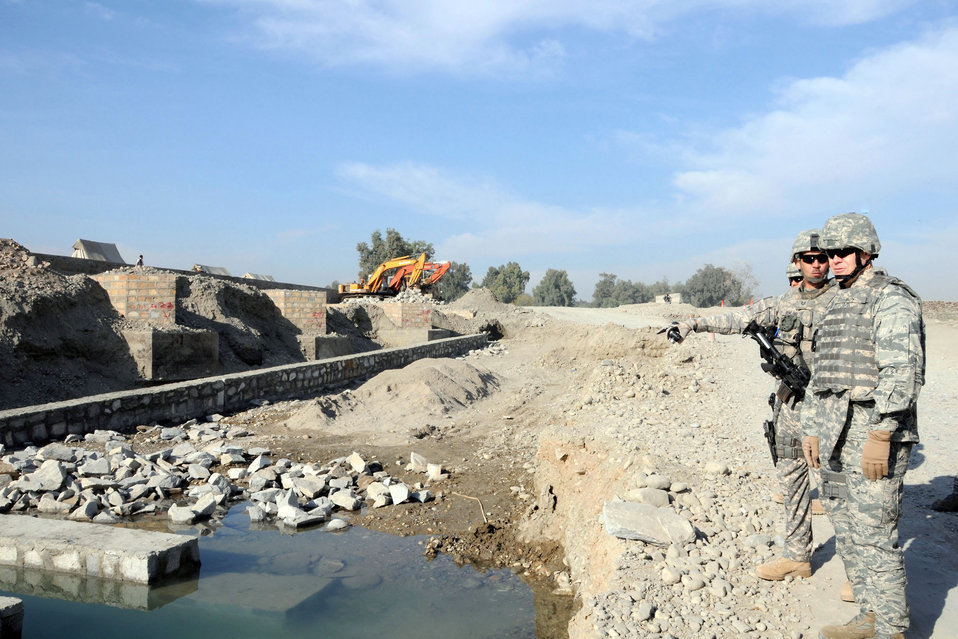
Chief Master Sgt. of the Air Force James A. Roy, speaks with Staff Sgt. Joshua Morrissette

Chief Master Sgt. of the Air Force James A. Roy (right), speaks with Staff Sgt. Joshua Morrissette at the Air Force-led Nangahar Provincial Reconstruction Team Nov. 28, 2009, in Jalalabad, Afghanistan. Sergeant Morrissette is assigned to the 2nd Brigade Embedded Training Team deployed from the 96th Logistics Readiness Squadron at Eglin Air Force Base, Fla.